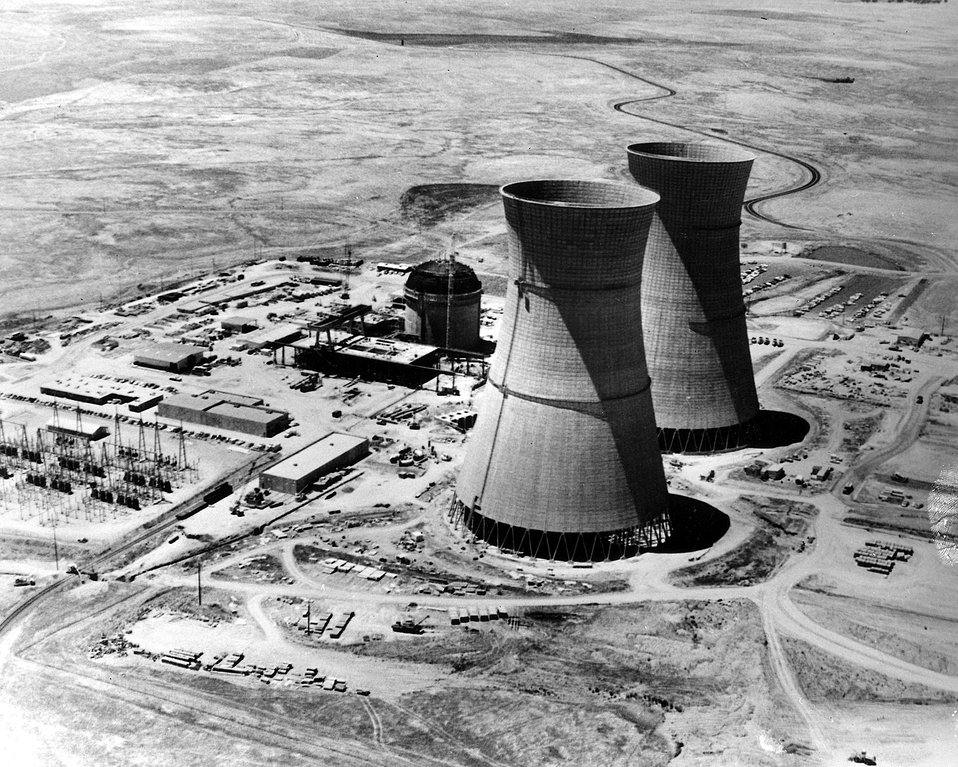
These twin hyperbolic cooling towers, 43 stories tall, are an integral part of the plant bing developed by the Bachtel Corporation at the 913-Mwe. Rancho Seco Nuclear Station in California. It is being constructed 5 miles southeast of Sacramento, for the Sacremento Municipal Utility District. Circa 1972.